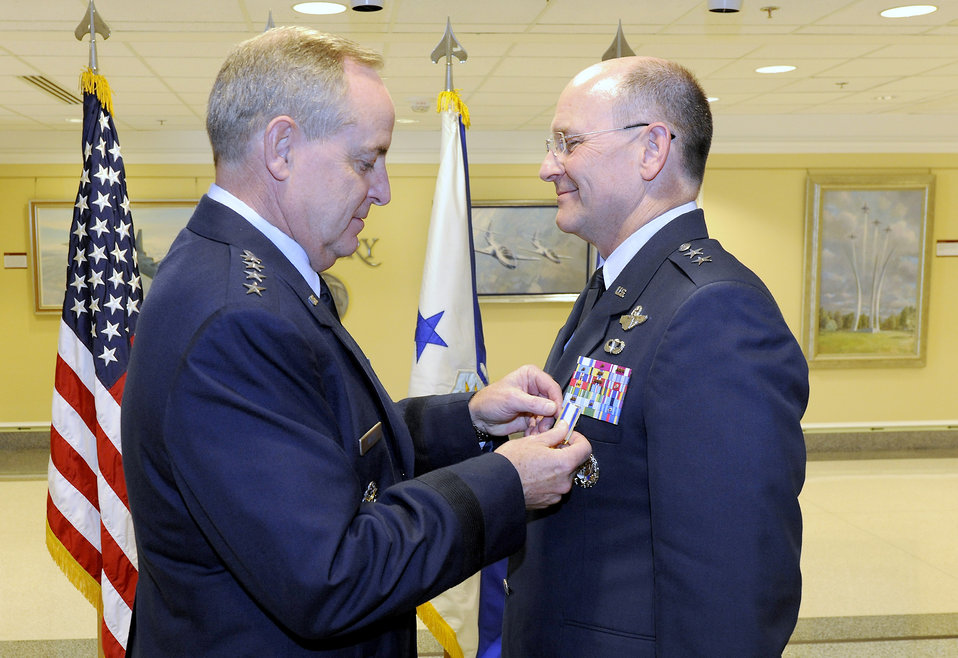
AFRC commander promoted

Air Force Chief of Staff Gen. Mark A. Welsh III presents Maj. Gen. James Jackson with the Distinguished Service Medal during Jackson’s promotion ceremony at the Pentagon on Aug. 16, 2012. Jackson, who is the chief of the Air Force Reserve and commander of Air Force Reserve Command, was promoted to lieutenant general during the ceremony.